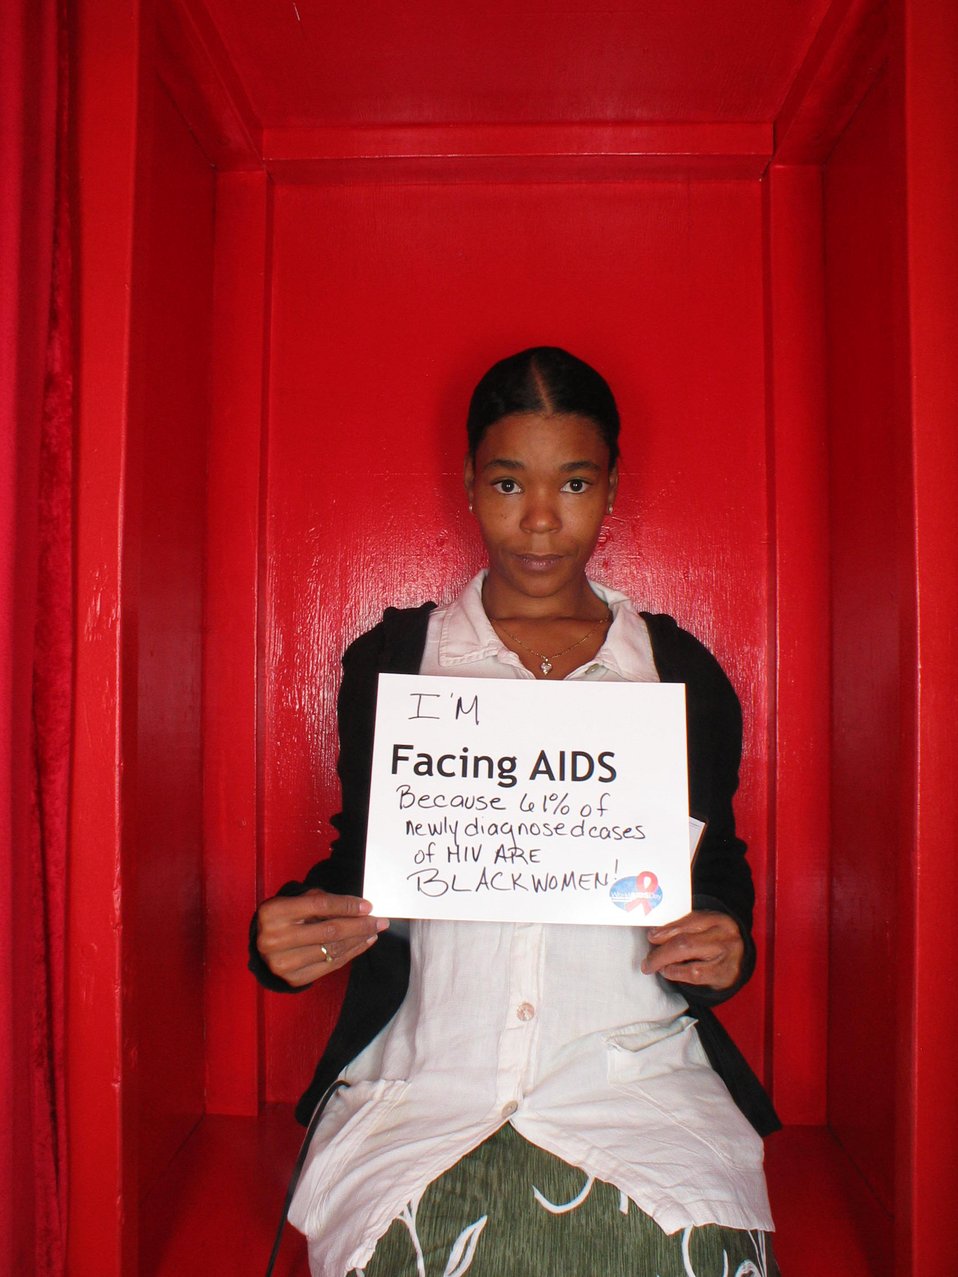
I'm Facing AIDS because 61% of newly diagnosed cases of HIV are Black women!